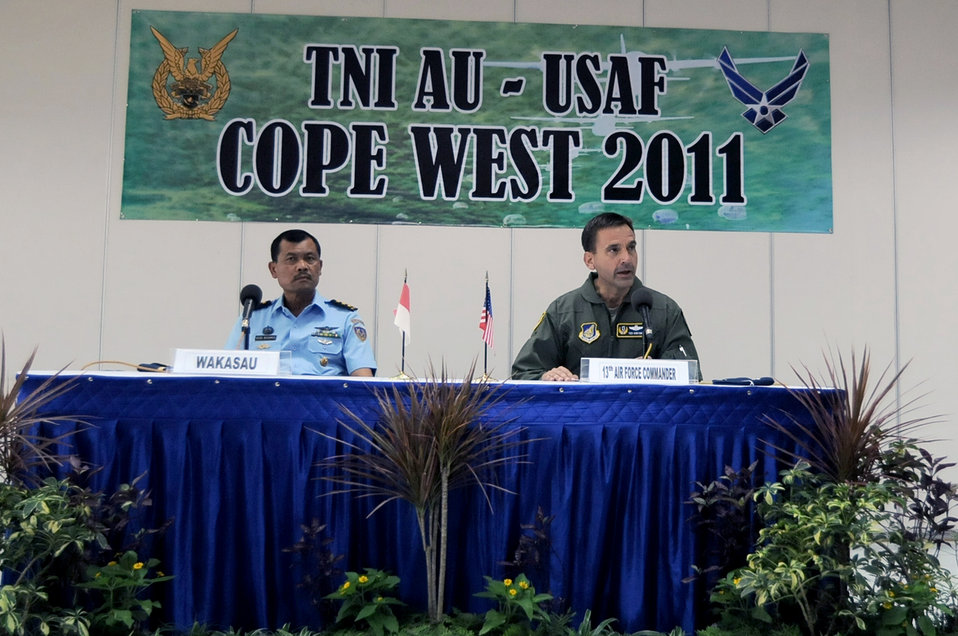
U.S., Indonesian airmen at Cope West 11

Lt. Gen. Stanley Kresge offers opening remarks to Indonesian and U.S. airmen during the opening ceremony for Exercise Cope West 11 June 20, 2011, at Halim Air Base, Indonesia. The combined training will help prepare the U.S. and Indonesian air forces to work together in promoting a peaceful Pacific region. General Kresge is the 13th Air Force commander.